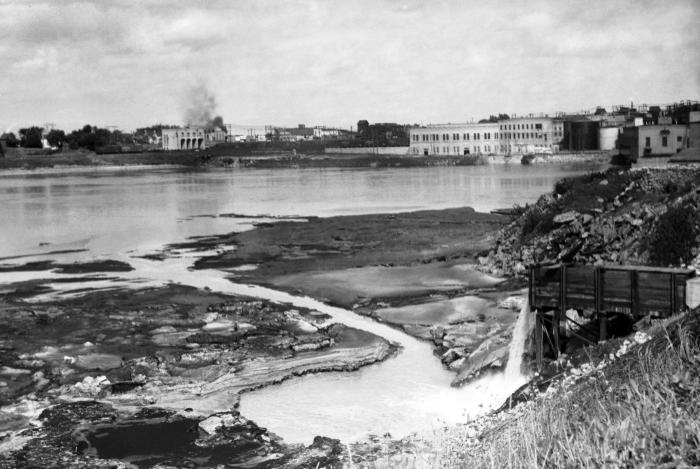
This historic 1937 photograph showed a paper plant's sewer outlet as it was emptying its contents into the Rainy River, seen from the International Falls, Minnesota side of the river.